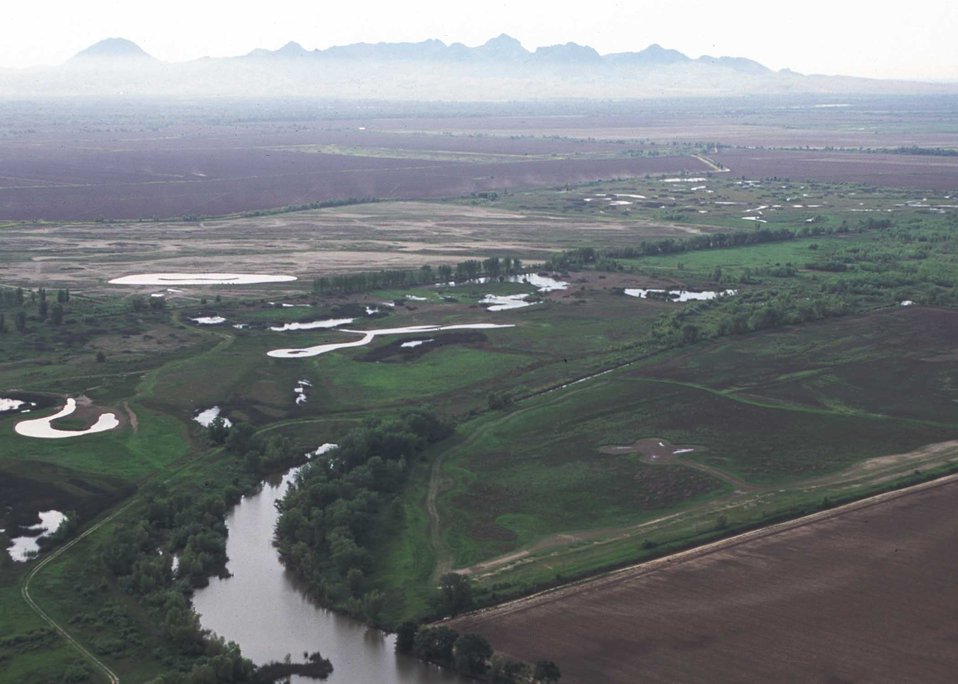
Aerial of wetlands and buffers in Butte County, CA.